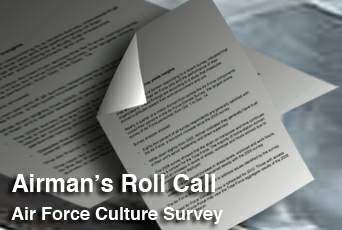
Airman's Roll Call: Air Force Climate Survey

This week's Airman's Roll Call focuses on the results of last year's Air Force Climate Survey.